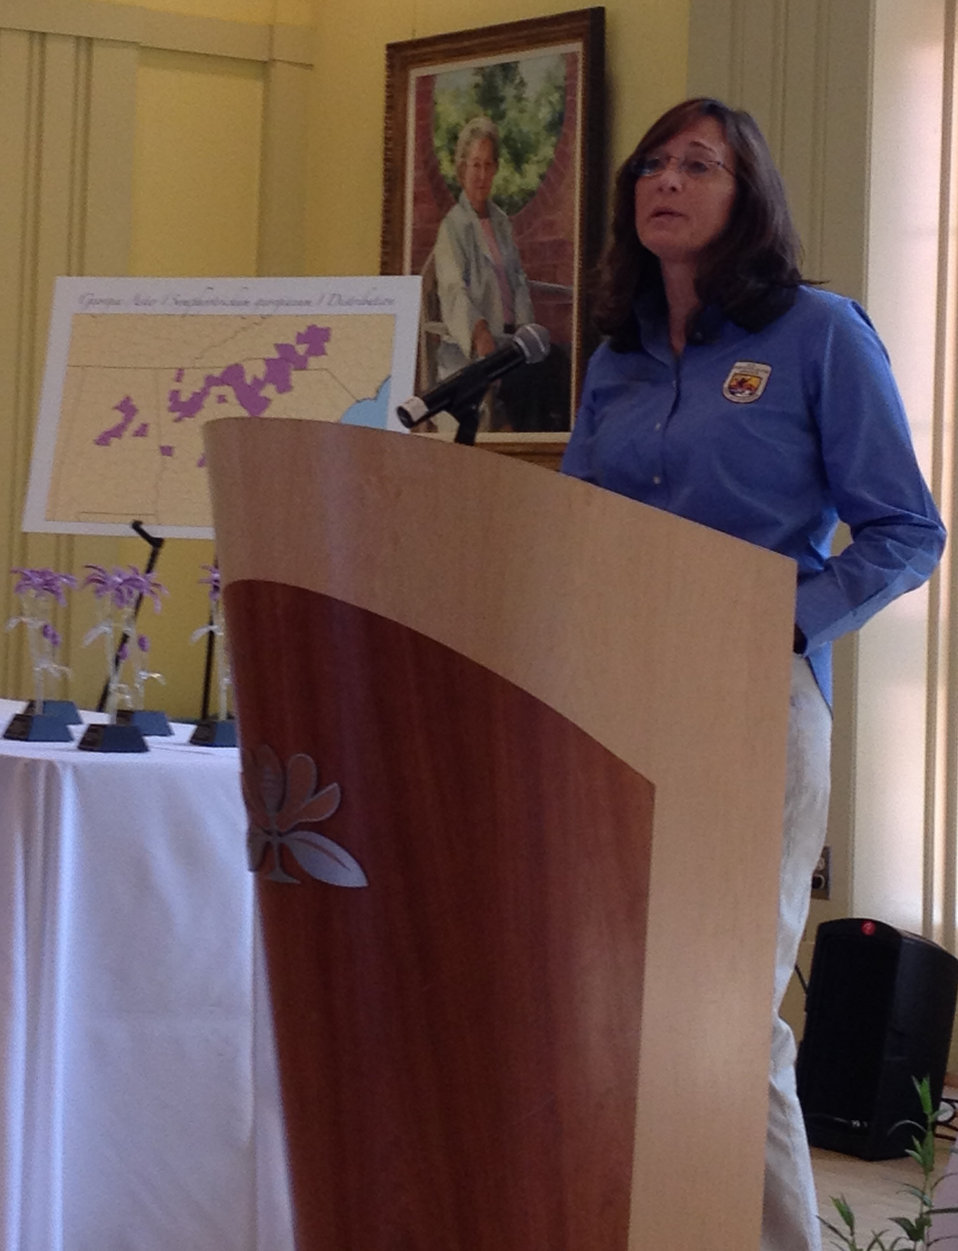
U.S. Fish and Wildlife Service's Cindy Dohner provides remarks

Georgia aster is an uncommon Southern plant that declined for decades, to the verge of receiving federal protection. However, nine organizations, private and public, are committing to conserve the plant in an effort that should keep it off the endangered species list. The commitment will be memorialized this Friday in an agreement called a Candidate Conservation Agreement, designed to proactively conserve plants and animals before they need Federal protection.

The Candidate Conservation Agreement was signed on Friday, May 16 at the Atlanta Botanical Gardens.